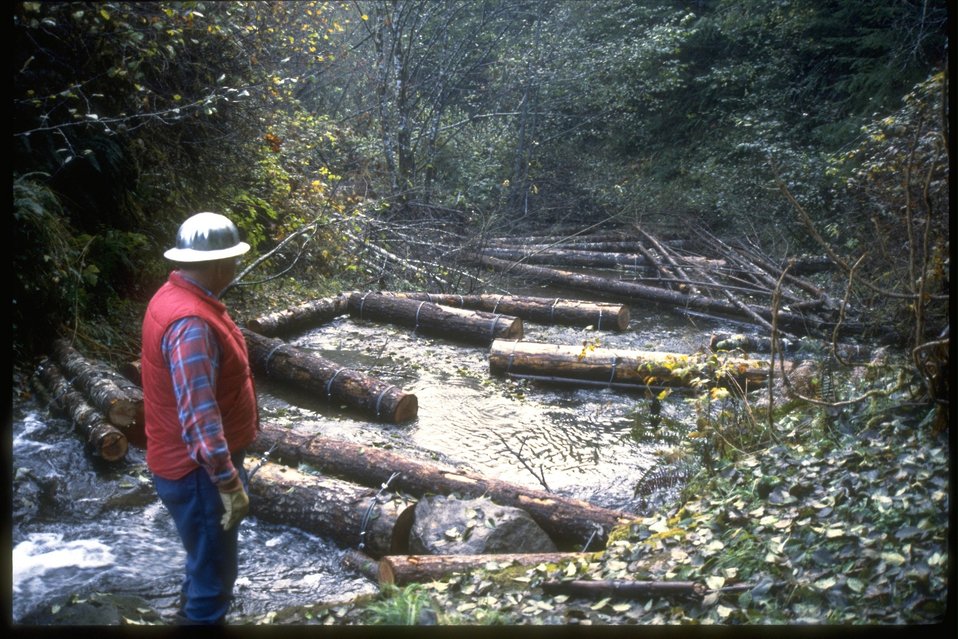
Fish Biologist and instream log stairs.